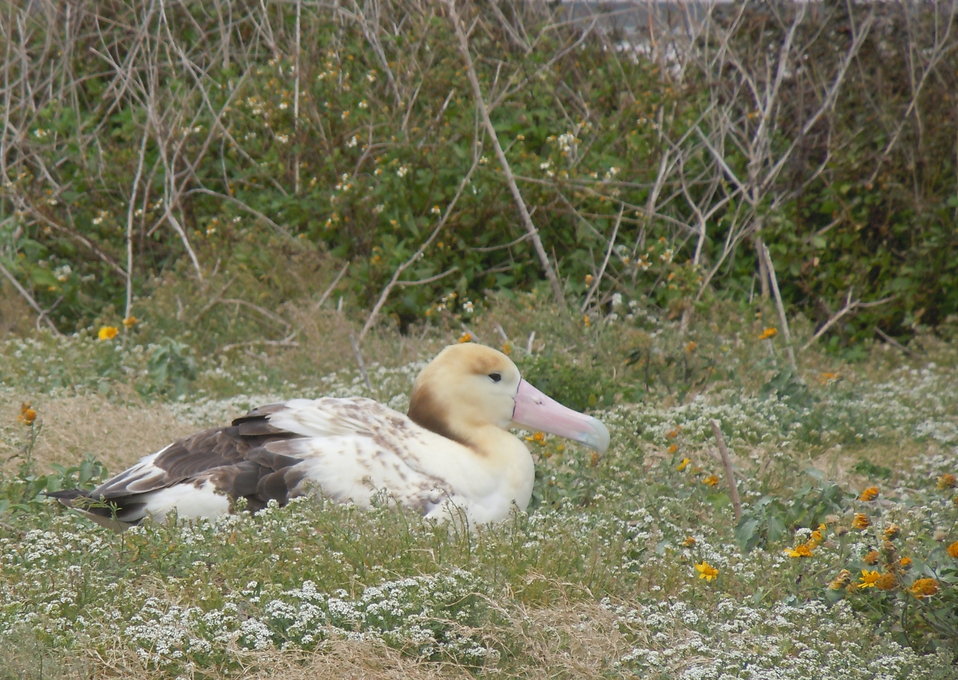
young short-tailed albatross

Once common, the short-tailed albatross was hunted for its feathers, meat and eggs, and was eliminated from its range except for a small cluster of Japanese islands. In 2011 a pair of short-tailed albatross nested on Midway for the first time and successfully fledged a chick. The next year five short-tailed albatross, including this subadult, were seen on the atoll.
Midway Atoll National Wildlife Refuge
March 2012